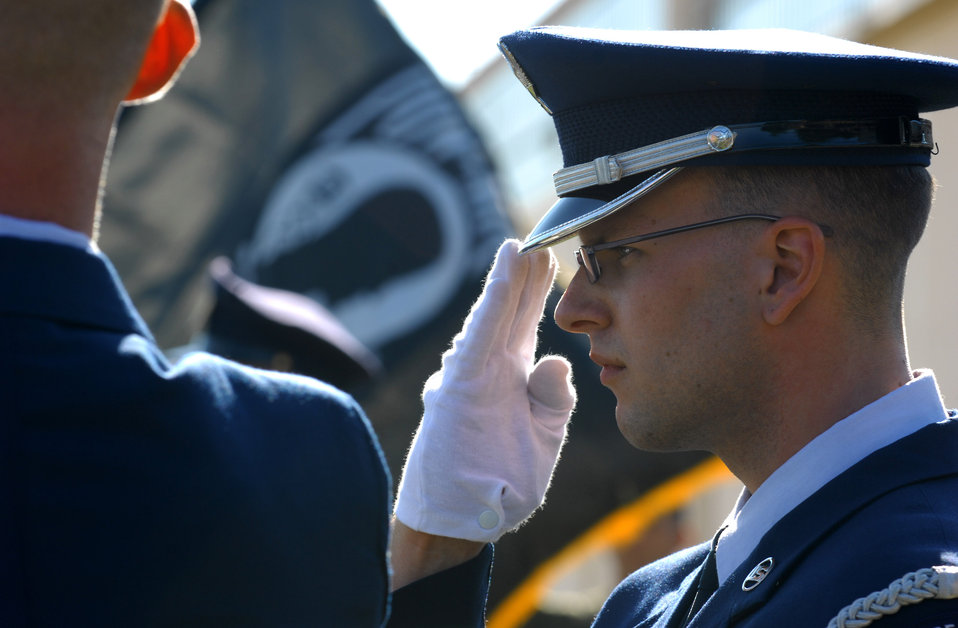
Remembering POWs, MIAs at Aviano

Staff Sgt. Justin Davis salutes the flag as it is lowered during a POW/MIA Remembrance Day retreat ceremony at Aviano Air Base, Italy, Sept. 21. Sergeant Davis is assigned to the 31st Communications Squadron.